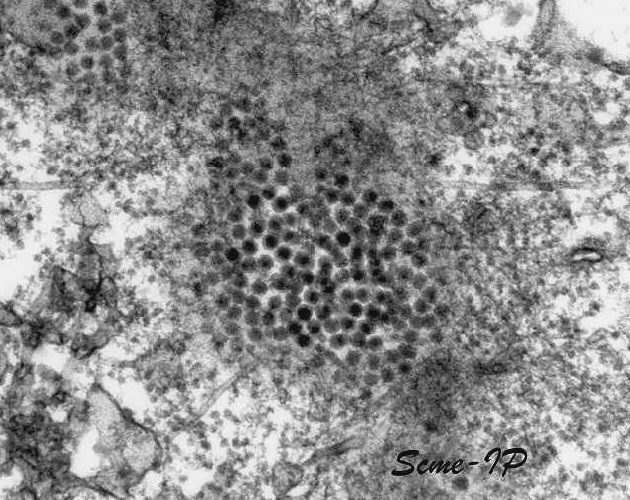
Transmission electron micrograph of West Nile virus.